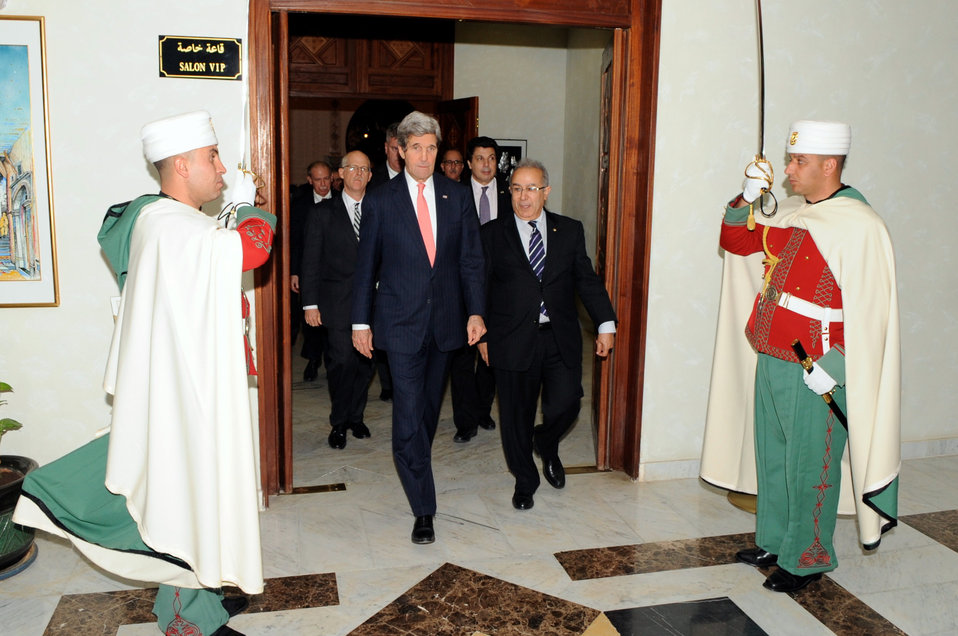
Secretary Kerry, Algerian Foreign Minister Lamamra Pass Through Honor Guard After Arrival Ceremony

U.S. Secretary of State John Kerry and Algerian Foreign Minister Ramtane Lamamra pass through an honor guard welcoming the Secretary upon his arrival in Algiers on April 2, 2014, for a Strategic Dialogue between the two countries.